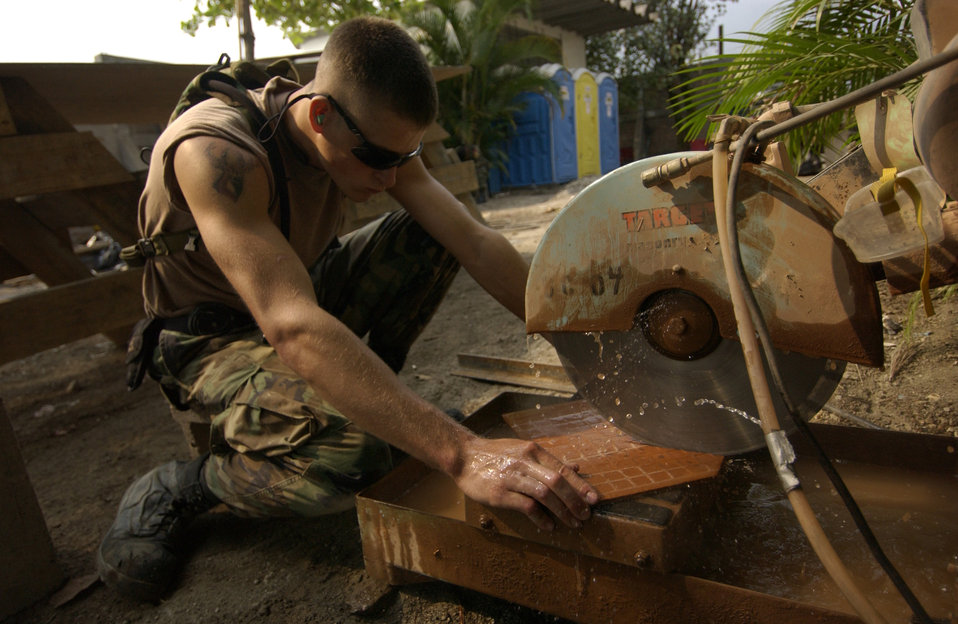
Stay in school

SAN VICENTE, El Salvador -- Airman 1st Class Daniel Frick cuts tile at the Tepetitan clinic-building project here April 13. The clinic-building project is one of the new horizons exercise projects that will provide two new schools and three clinics in areas of San Vicente that were hit by earthquakes. Airman Frick is a member of the 28th Civil Engineer Squadron at Ellsworth Air Force Base, S.D.